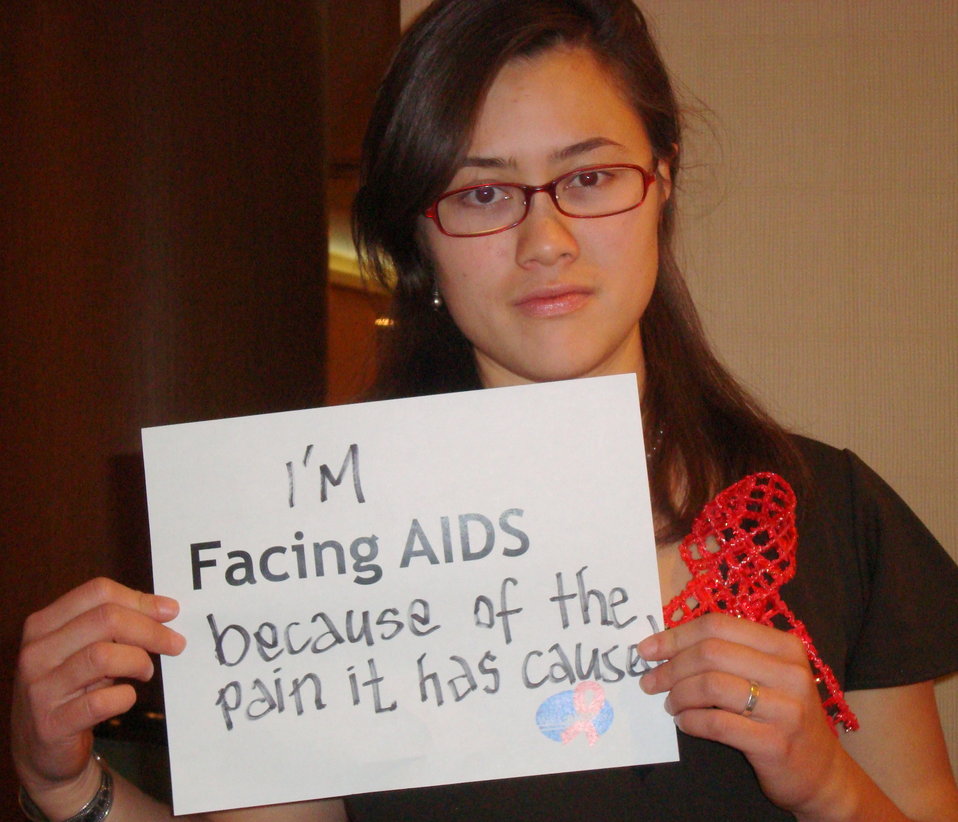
FacingAIDSCampaign 043